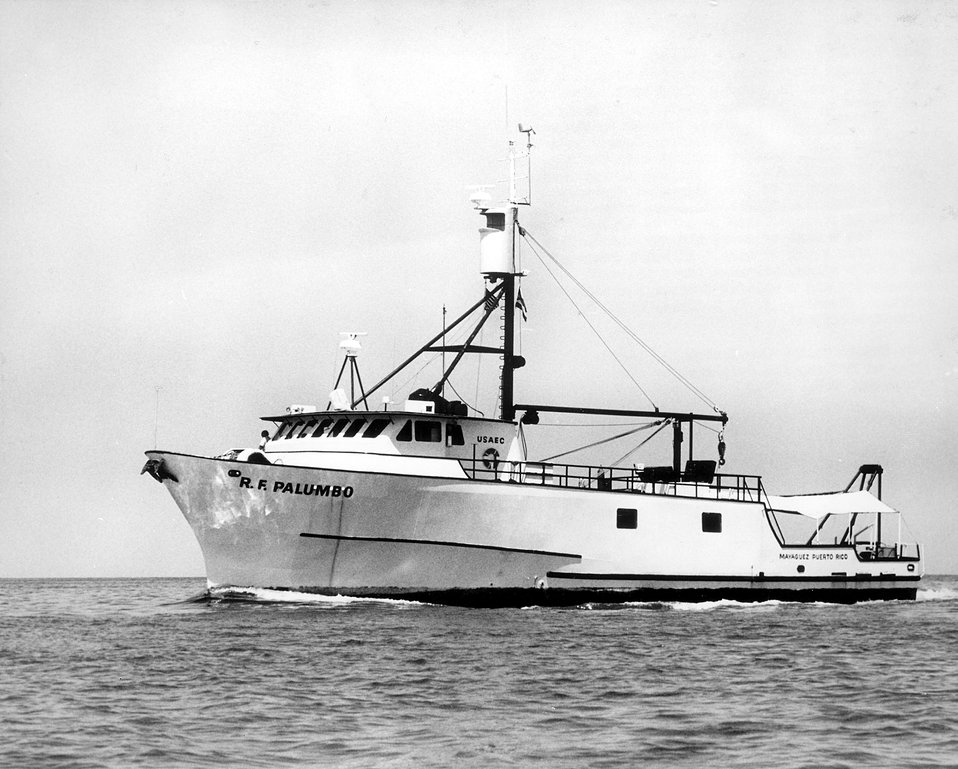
The U.S. Atomic Energy Commission's research vessel, R.F. Palumbo has been in service since 1971. Circa 1972.